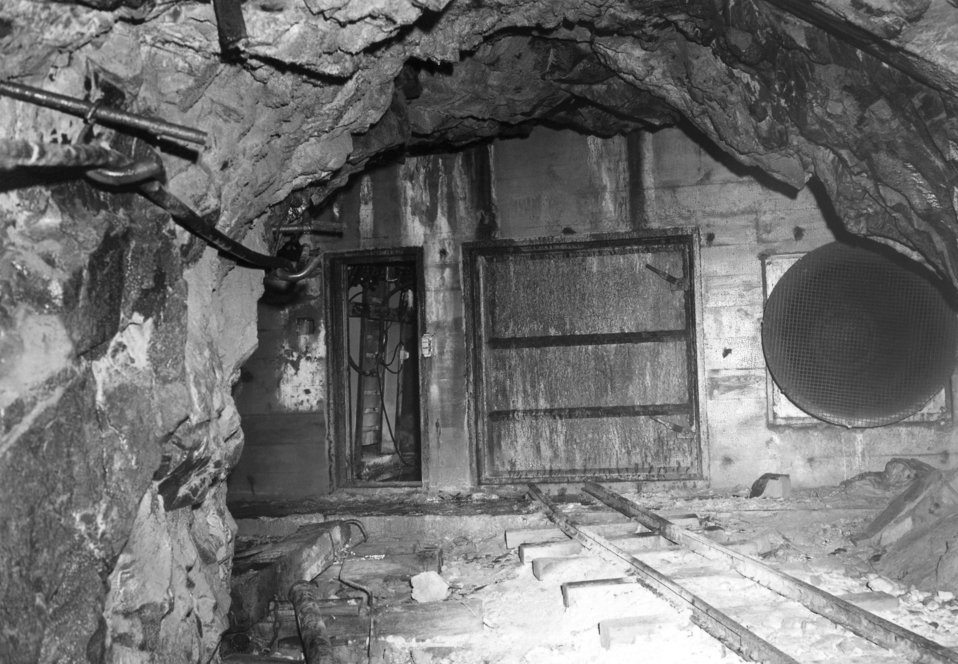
This historical photograph, provided by the Center for Disease Control's (CDC), National Institute for Occupational Safety and Health (NIOSH), depicted the inside of the 'U.S. Smelting, Refining, & Mining Co.' mine shaft in Utah. Located at the bottom of the British Shaft A. (Intake Side), in the main ventilation shaft, No. 3 (U.S. Section), where towards the right, a 50 HP Joy Axivane� exhaust fan was situated. Note the grid covering the fan's intake portal. This fan had a 35,000 cfm flow-through capacity. In the close confines of a subterranean mine such as this one, it's critically important that proper air quality be maintained.